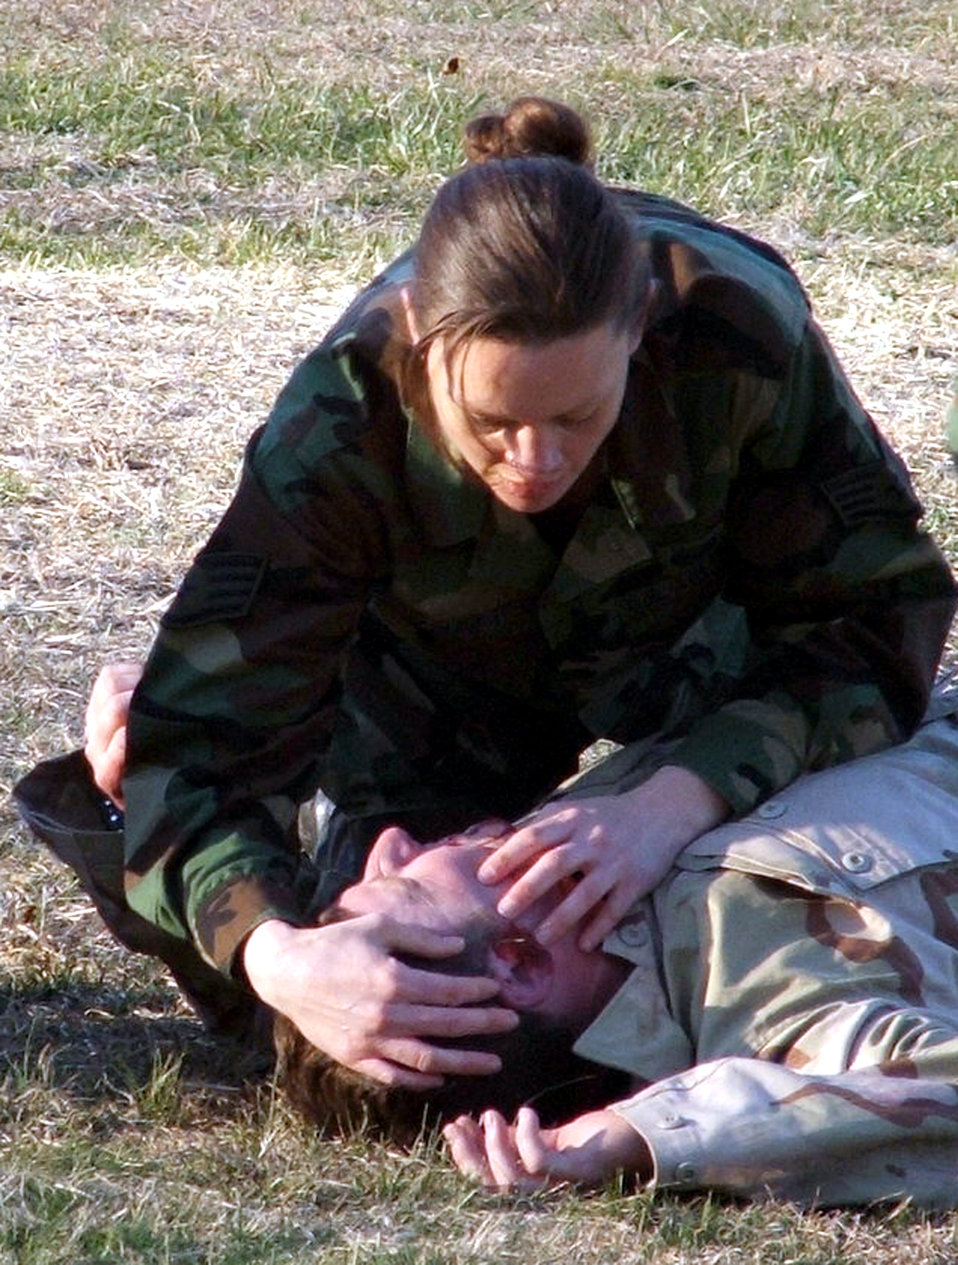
Phoenix Raven training highlights needs of today's security forces Airman

Staff Sgt. April Apo assists a